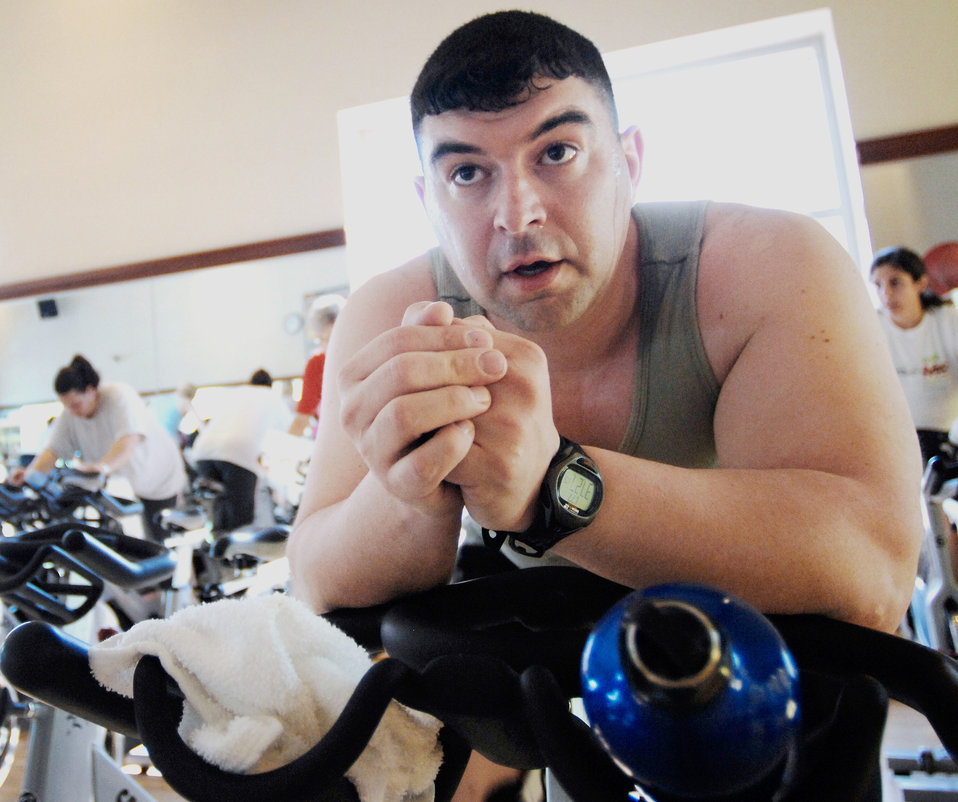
Disabled veteran trains for inaugural Warrior Games

Air Force veteran Matthew Bilancia rides a spin bike during a workout March 24, 2010, at a health club in Fairfax, Va. Mr. Bilancia is training up for the inaugural Warrior Games in Colorado Springs, Colo., May 10 to 14.